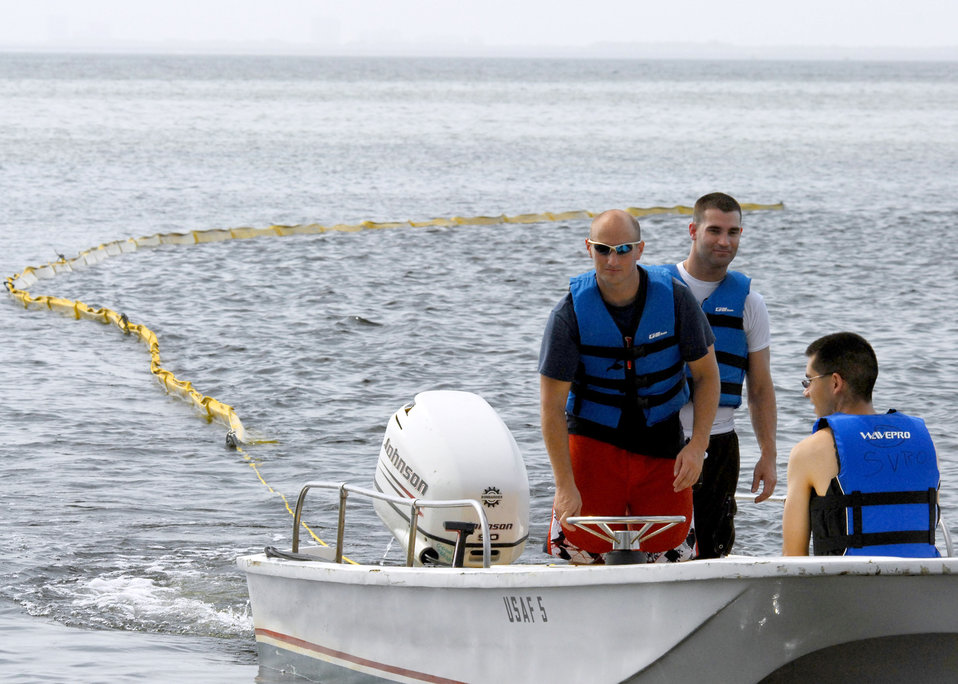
Eglin boom

Volunteers bring the towed oil boom into shore prior to installing it along one of many shorelines July 14, 2010, at Eglin Air Force Base, Fla. Boom is an oil containment device used to trap oil in the water so it can be collected before reaching the shore..